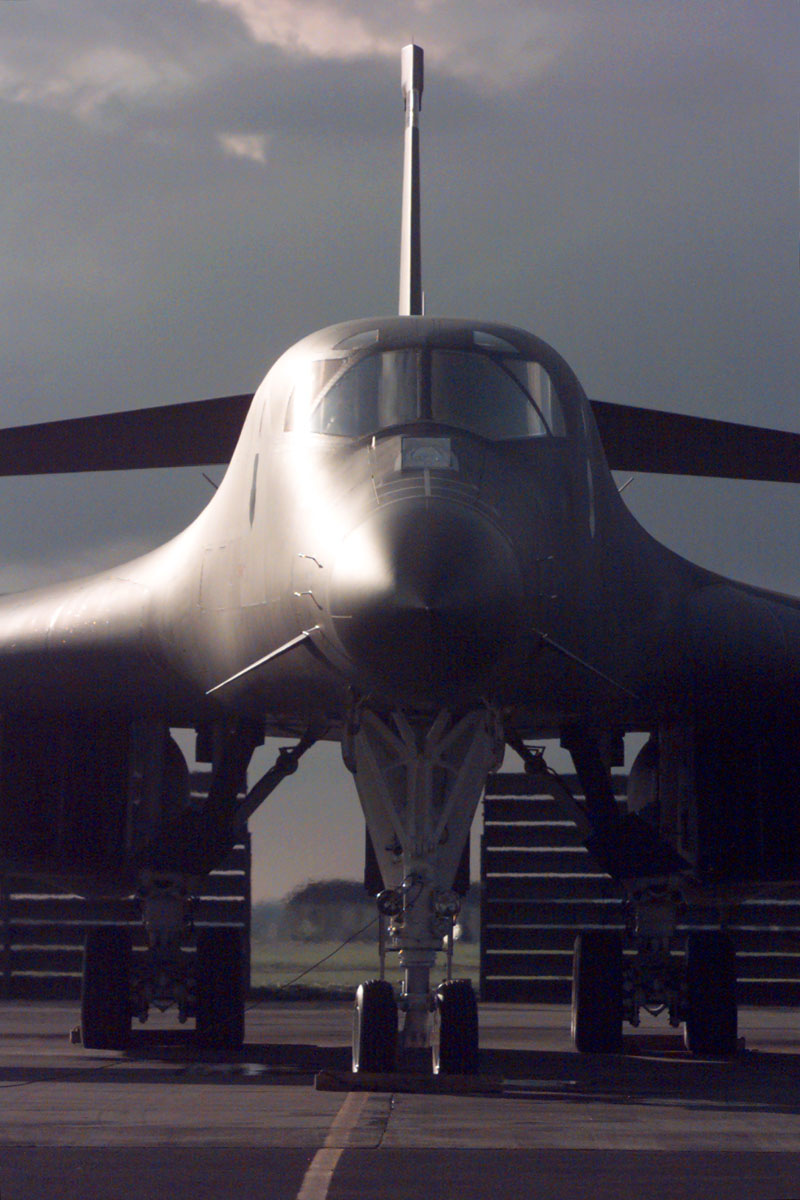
Forward deployed Lancers

ROYAL AIR FORCE FAIRFORD, England -- Five B-1B Lancers are forward deployed here in support of Operation Allied Force. The B-1B is a long-range strategic bomber, capable of flying intercontinental missions and penetrating present and future sophisticated enemy defenses.